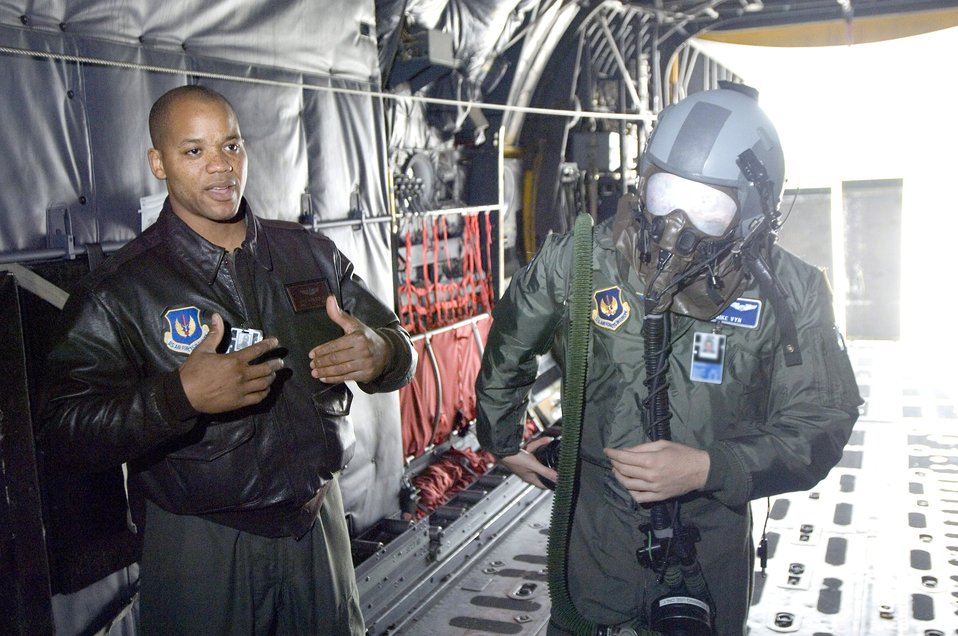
Egress training

First Lt. Mike Vyn wears an emergency respiratory protection system while Master Sgt. Lewis Holston explains the importance of maintaining situational awareness on a C-130 Hercules at Ramstein Air Base, Germany, on Thursday, June 1, 2006. The Airmen are assigned to the 37th Airlift Squadron at Ramstein, and were training in egress procedures while wearing the protective system.